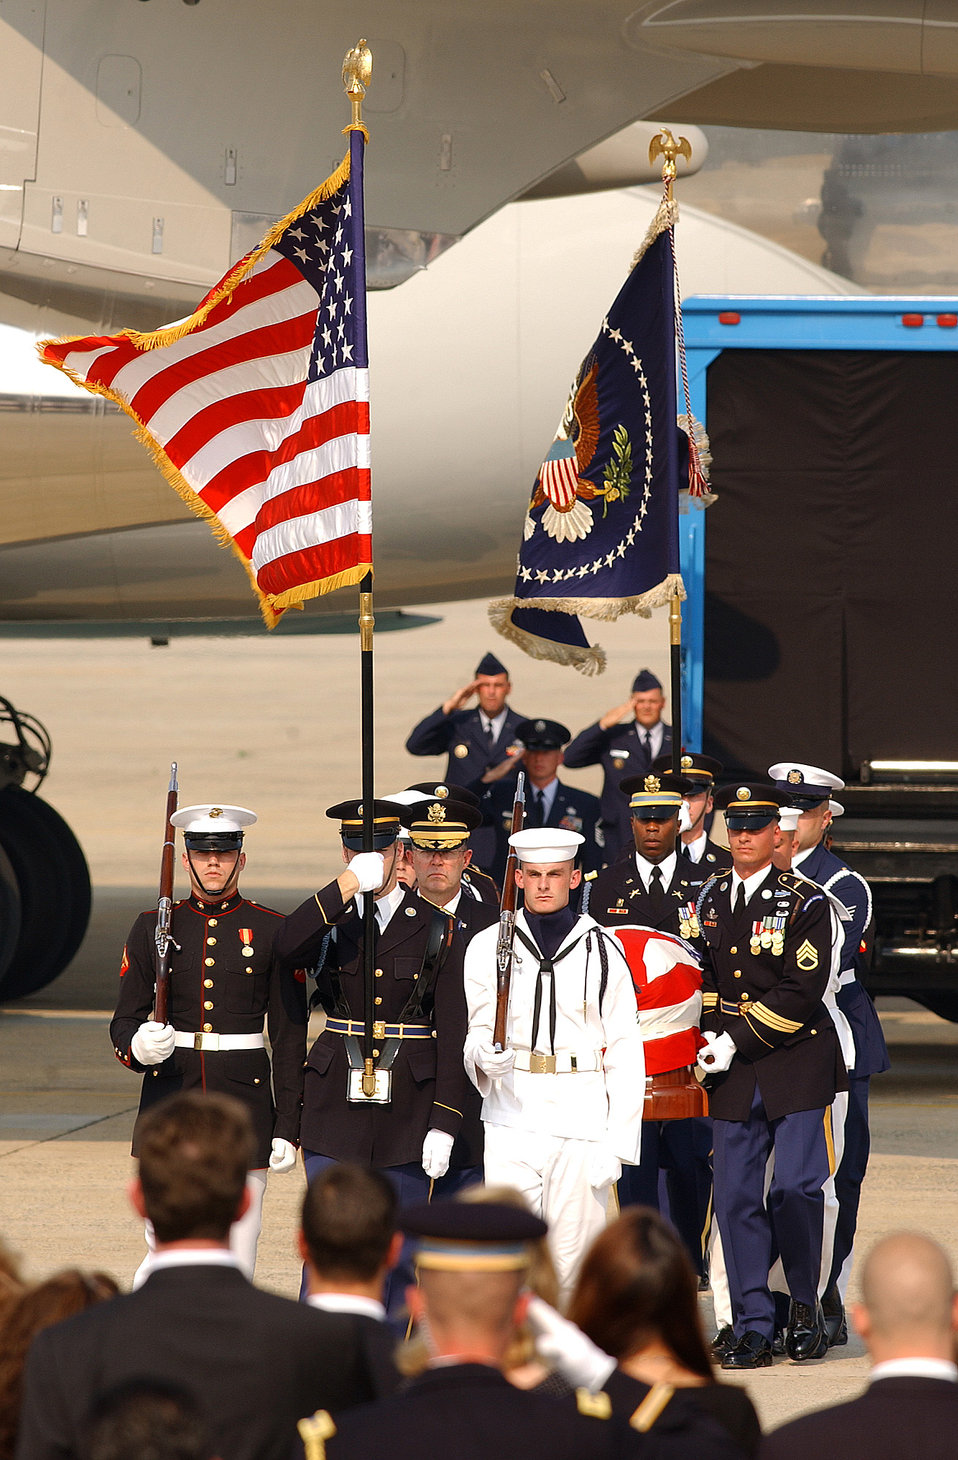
Final salute

ANDREWS AIR FORCE BASE, Md. -- Members of a joint honor guard carry former President Ronald Reagan's flag-draped casket to a hearse for the funeral procession during arrival here June 9. He served as the military's commander in chief from 1981 to 1989.